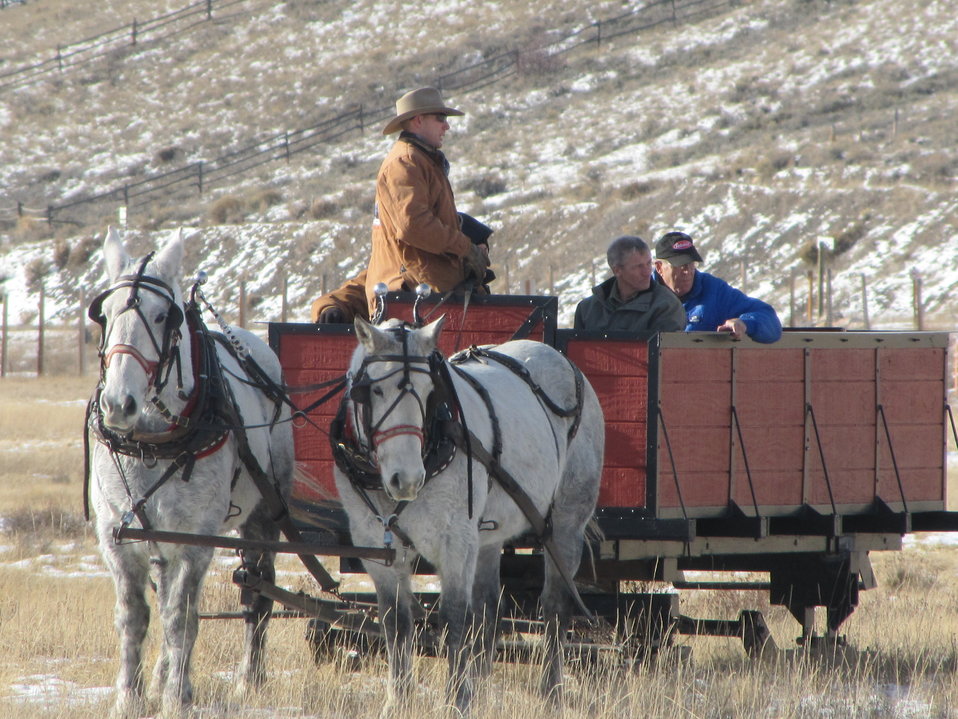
Tuned in to Sights and Sounds

Visitors listen as their sleigh driver passes along interesting information about elk and wildlife management.